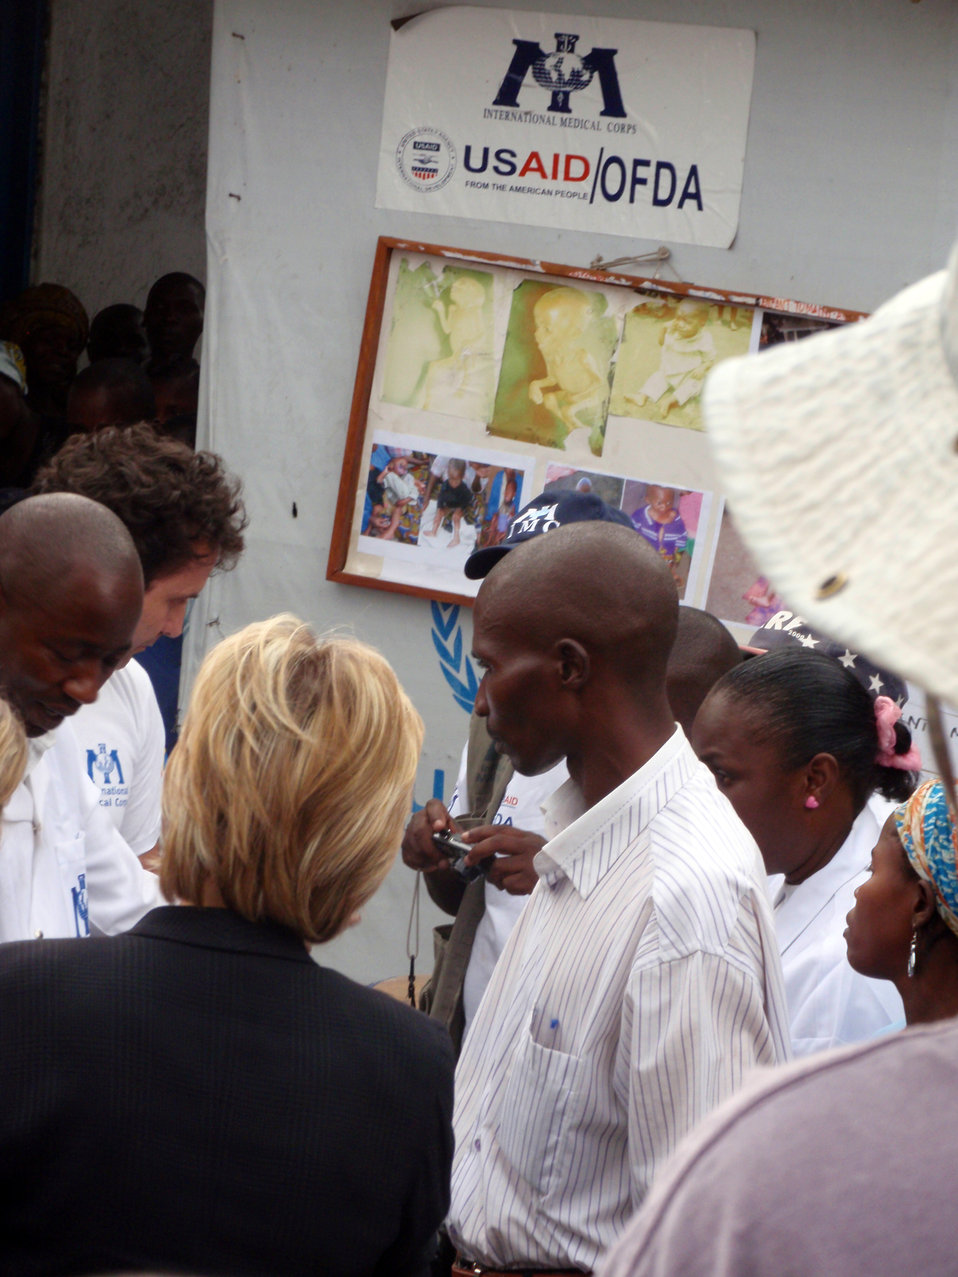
Behind the Scenes: Secretary Clinton Visits Mugunga IDP Camp

U.S. Secretary of State Hillary Rodham Clinton is briefed by staff at the Mugunga Internally Displaced Person (IDP) Camp in Goma, Democratic Republic of Congo August 11, 2009.